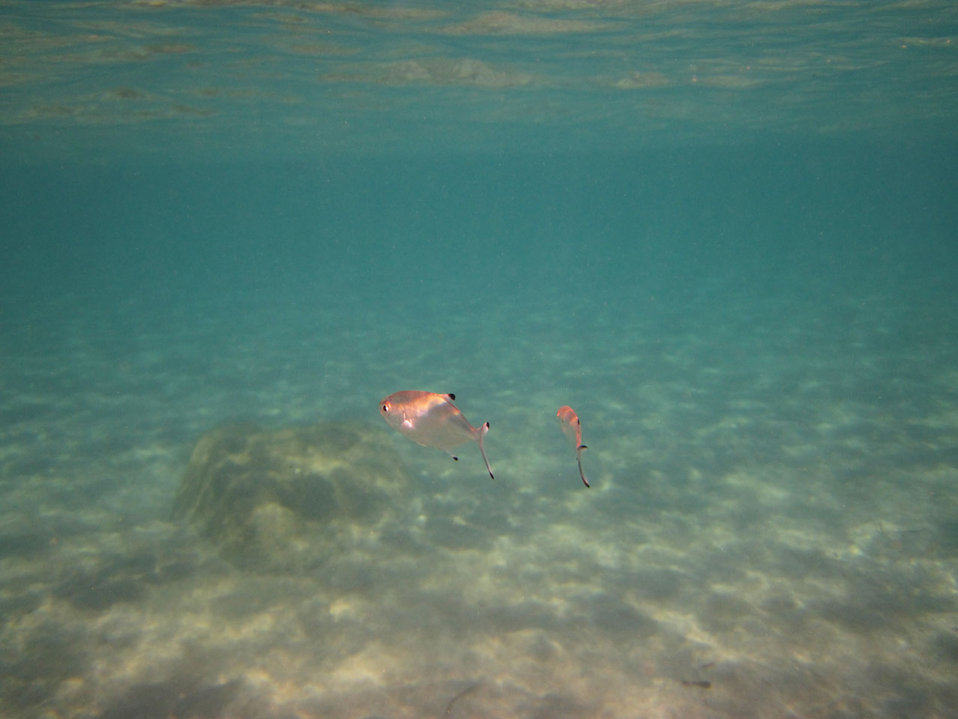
Sea fish underwater

Two fish in whole ocean.